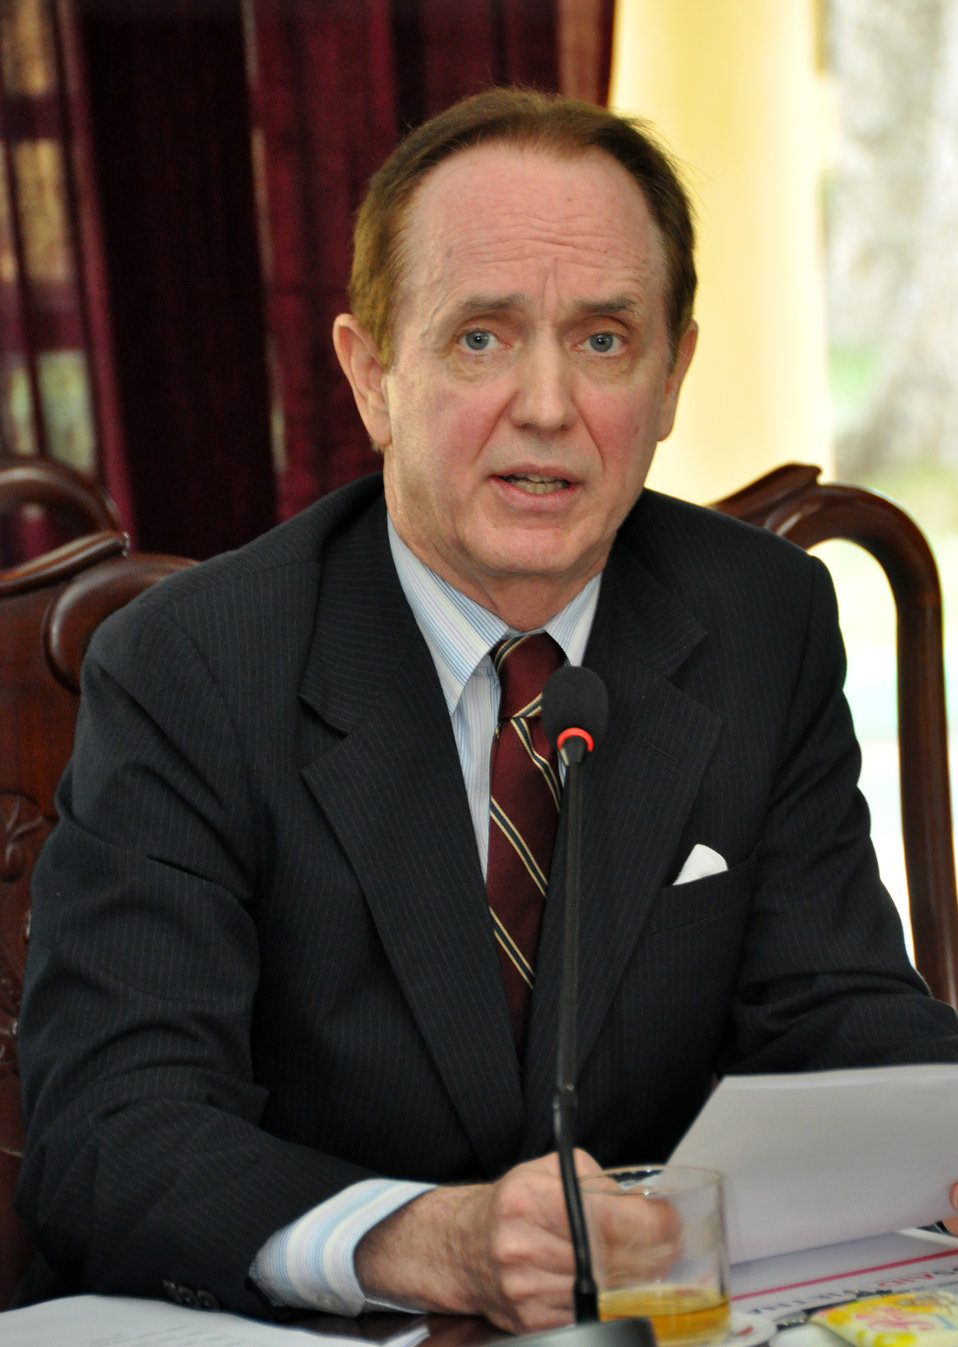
USAID Mission Director Francis Donovan

USAID delivers TB and MDR-TB diagnostic equipment